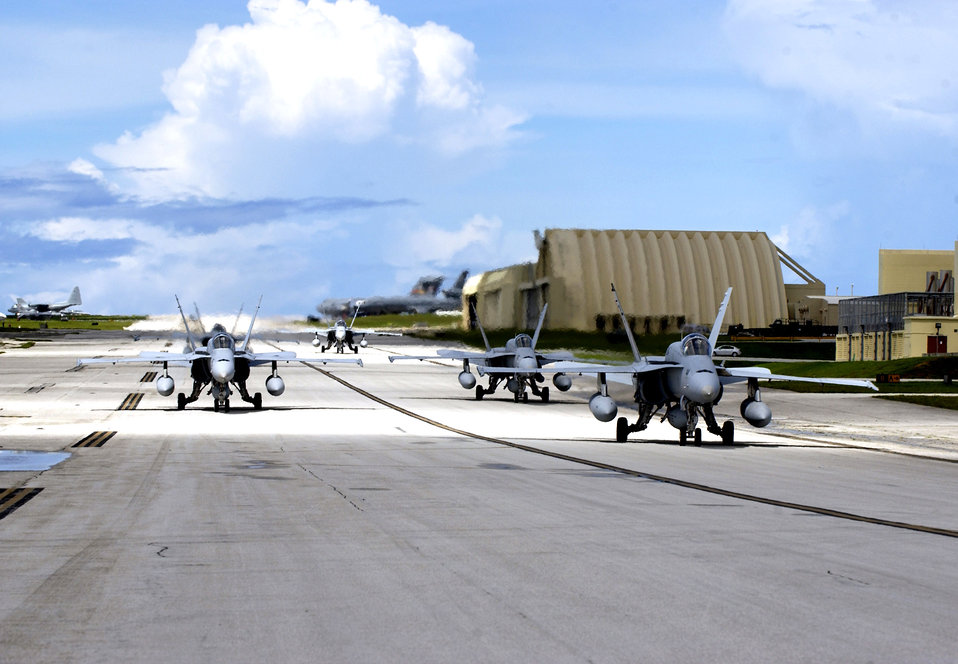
Airpower key to Exercise Valiant Shield

Navy F-18 Hornets from the Naval Air Station's Joint Reserve Base in New Orleans arrive to take part in the Valiant Shield exercise Aug. 6 at Andersen Air Force Base, Guam. During the exercise being held Aug. 6 to 13, Airmen will participate in integrated joint training with Navy and Coast Guard forces. Andersen AFB will also be the beddown location for approximately 64 Air Force and 29 Navy aircraft, plus transient aircraft, during Valiant Shield.